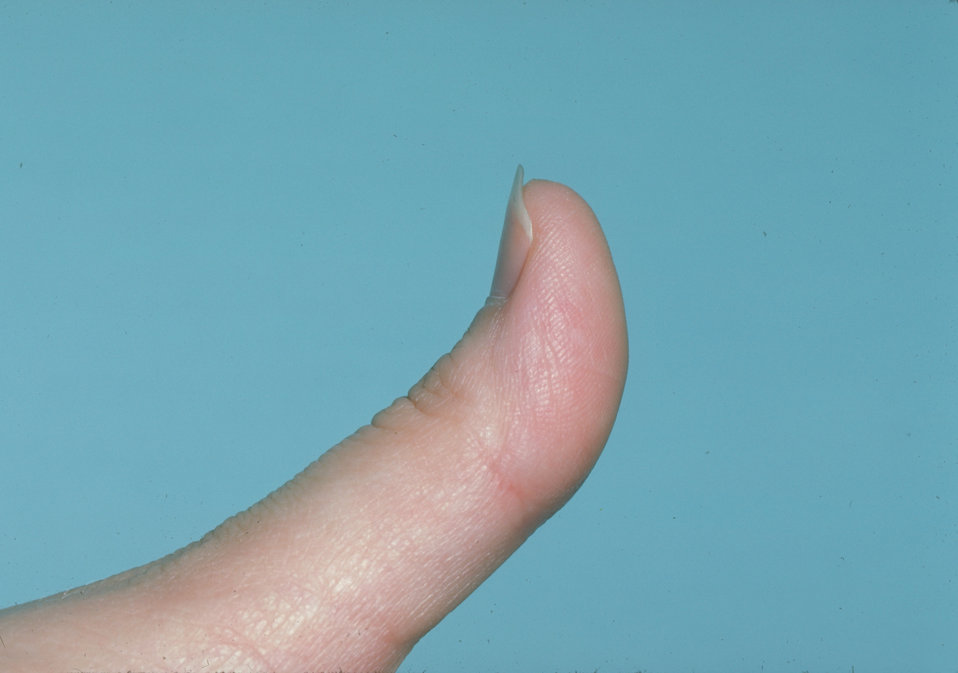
This patient presented with sporotrichosis affecting the skin of the thumb.